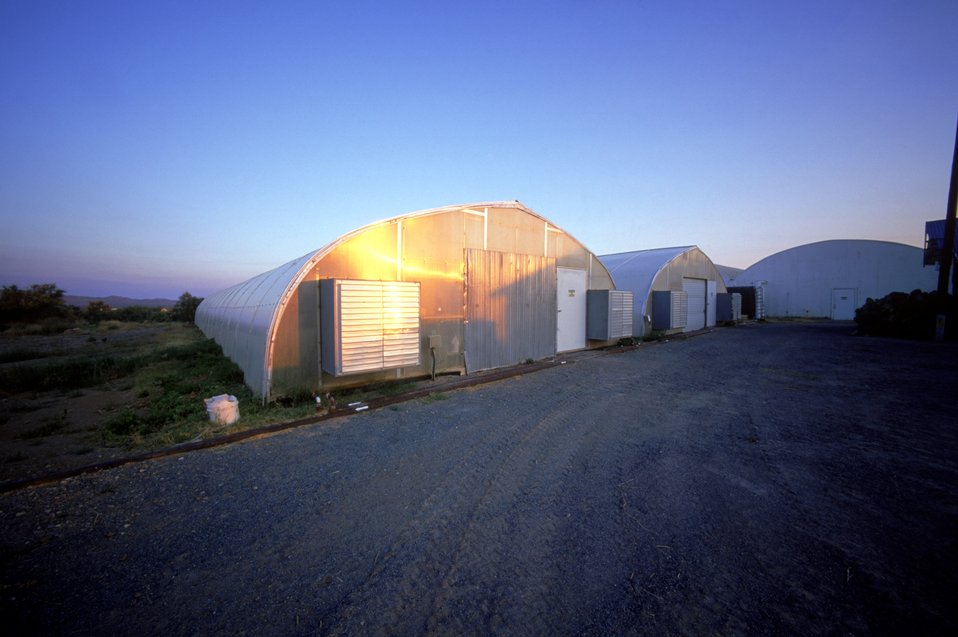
THE MASSON RADIUM SPRINGS FARMS GEOTHERMAL GREENHOUSE IS LOCATED ON PRIVATE LAND IN SOUTHERN NEW MEXICO.